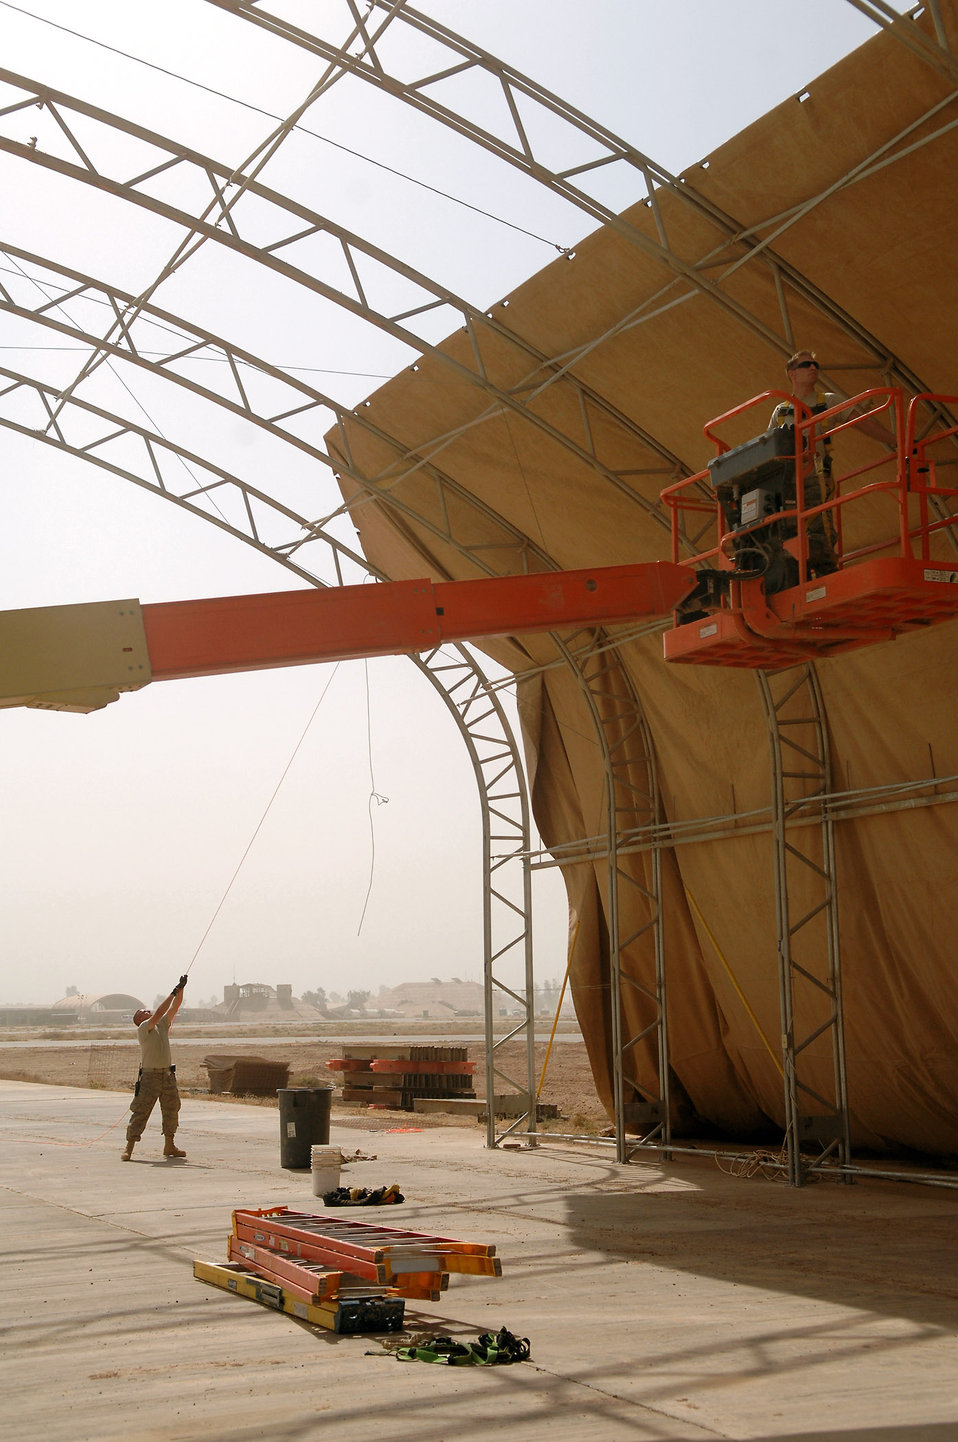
Under the big top

Airmen from the 332nd Expeditionary Civil Engineer Squadron structural engineer shop raise a big top shelter canopy May 7 at Balad Air Base, Iraq. The shelter was moved from its previous location to deconflict with flightline operations.